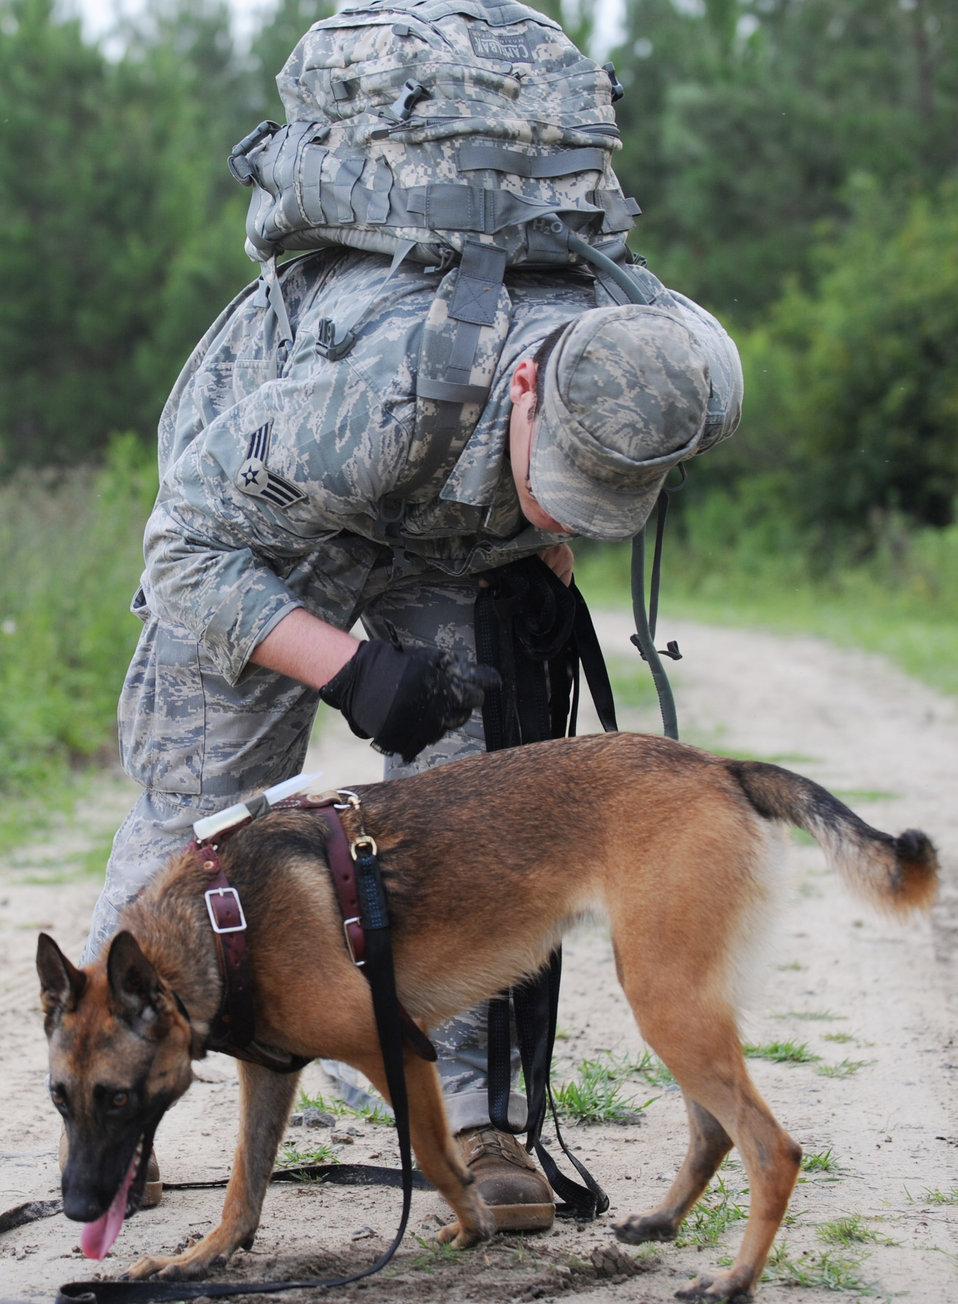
New dog and handler develop bond

Taking a rest from a ruck march, Senior Airman Beaun Clegg and Rreyana continue working on building a relationship July 9 at Moody Air Force Base, Ga. Rreyana recently finished training at Lackland AFB, Texas, and is preparing to be combat-ready.